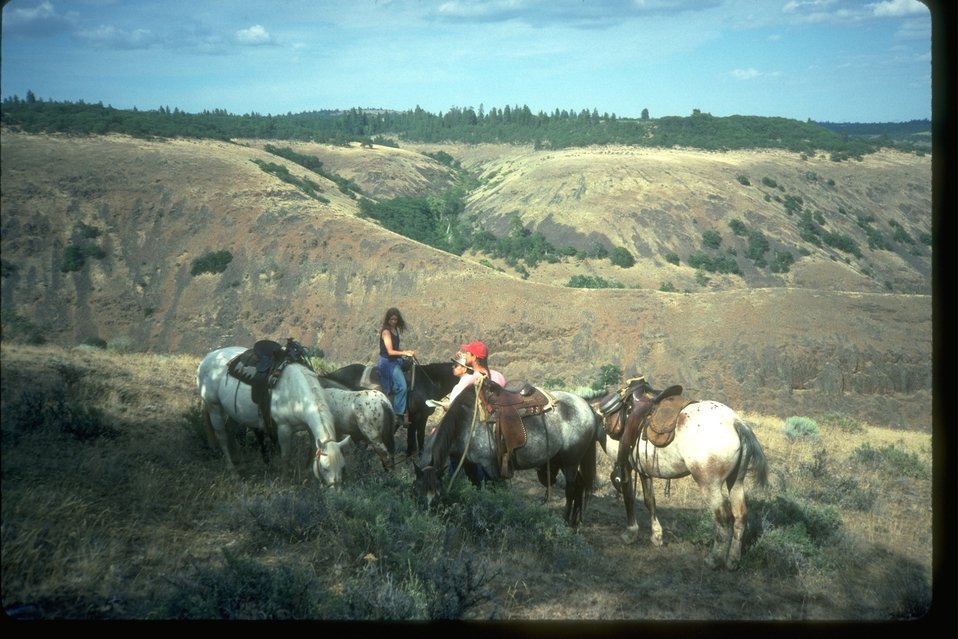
Horseback riding at Rock Creek in Klickitat County, Washington.